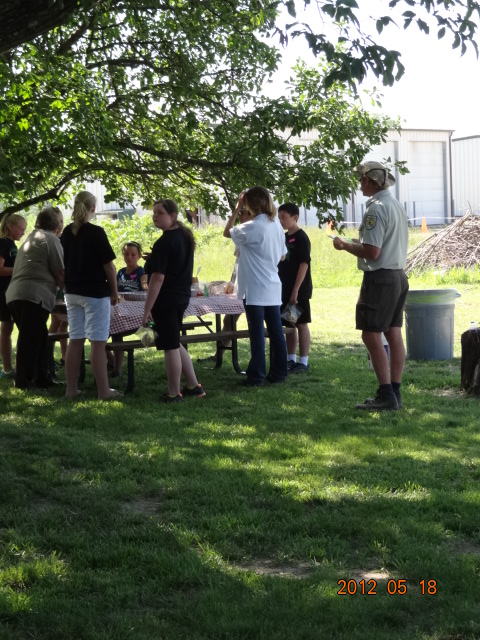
International Migratory Bird Day 2012

Marais des Cygnes National Wildlife Refuge